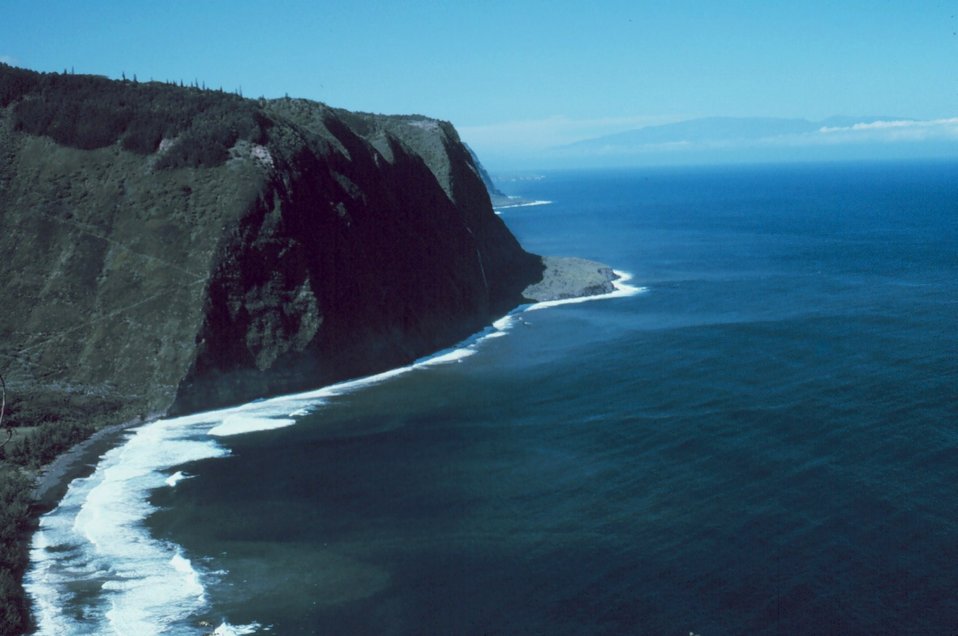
Looking northwest across the Waipio Valley to the Kohala Mountains On the northwest tip of Hawaii. Maui is visible to the northwest.